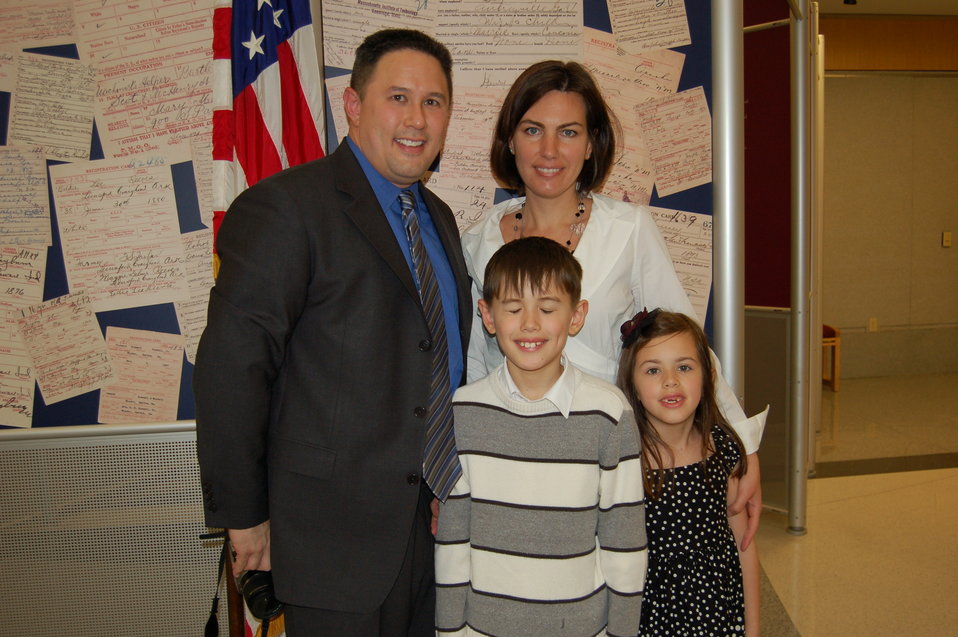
New Citizens